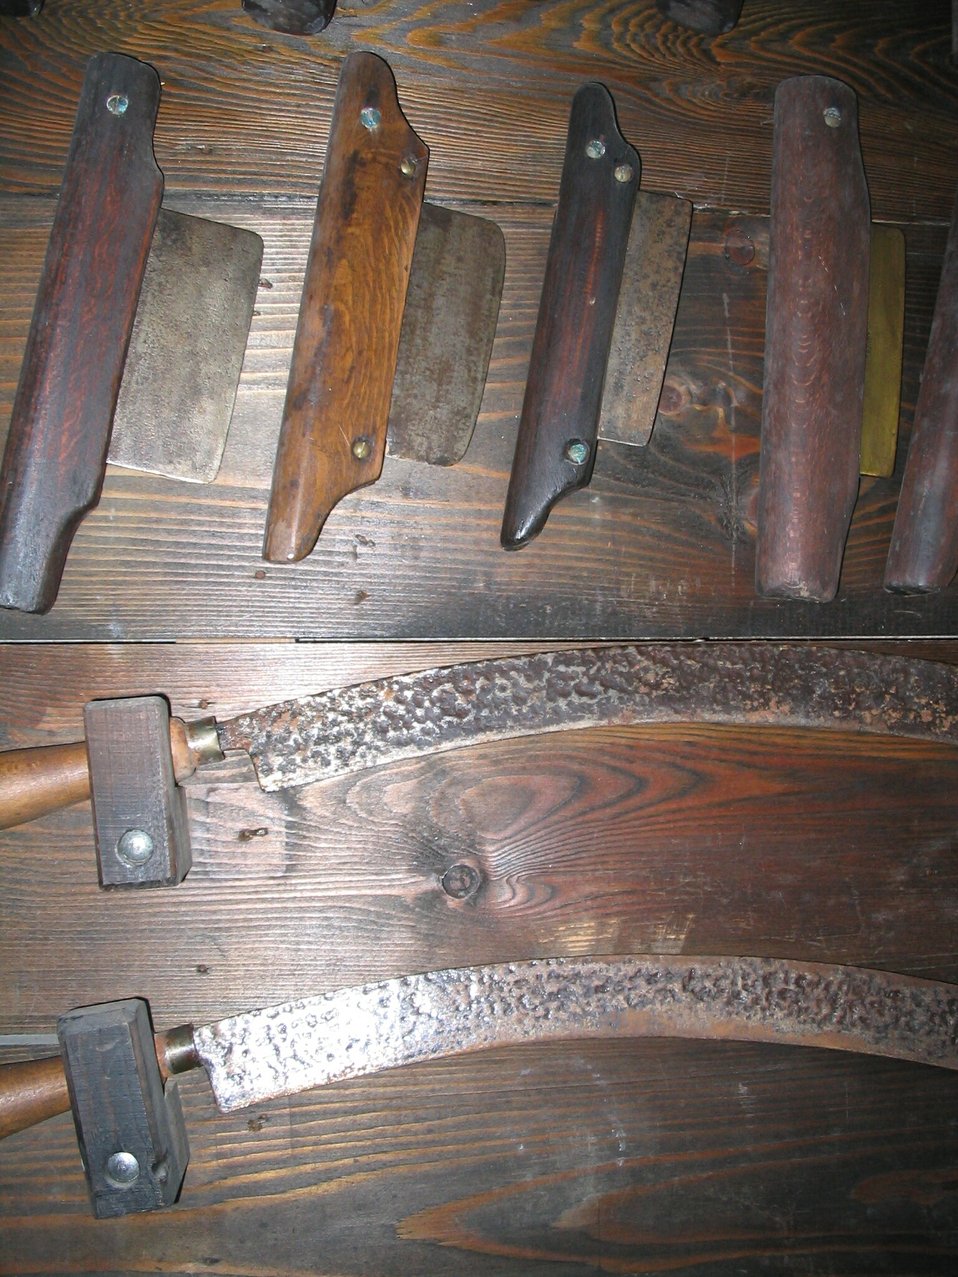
Deutsch: Handwerkszeug des Gerbers, Westfälisches Freilichtmuseum Hagen Tanner's tools, Westfälisches Freilichtmuseum Hagen